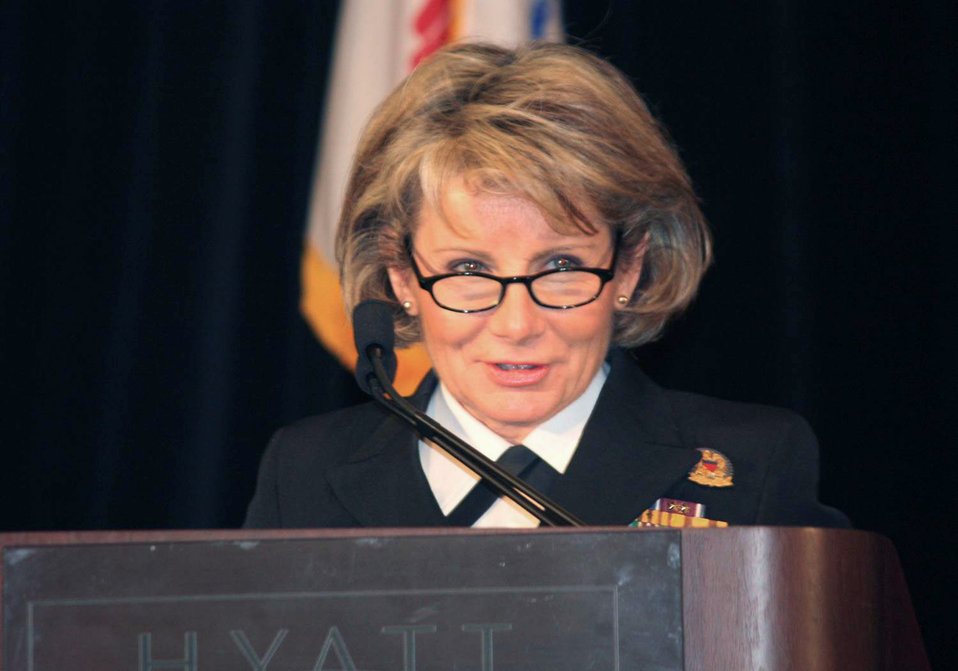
Psychological health directors

Public Health Service Capt. Joan Hunter speaks at the 2010 Suicide Prevention Conference sponsored by the Defense and Veterans Affairs departments in Washington. Captain Hunter is the director of psychological health for the National Guard Bureau.